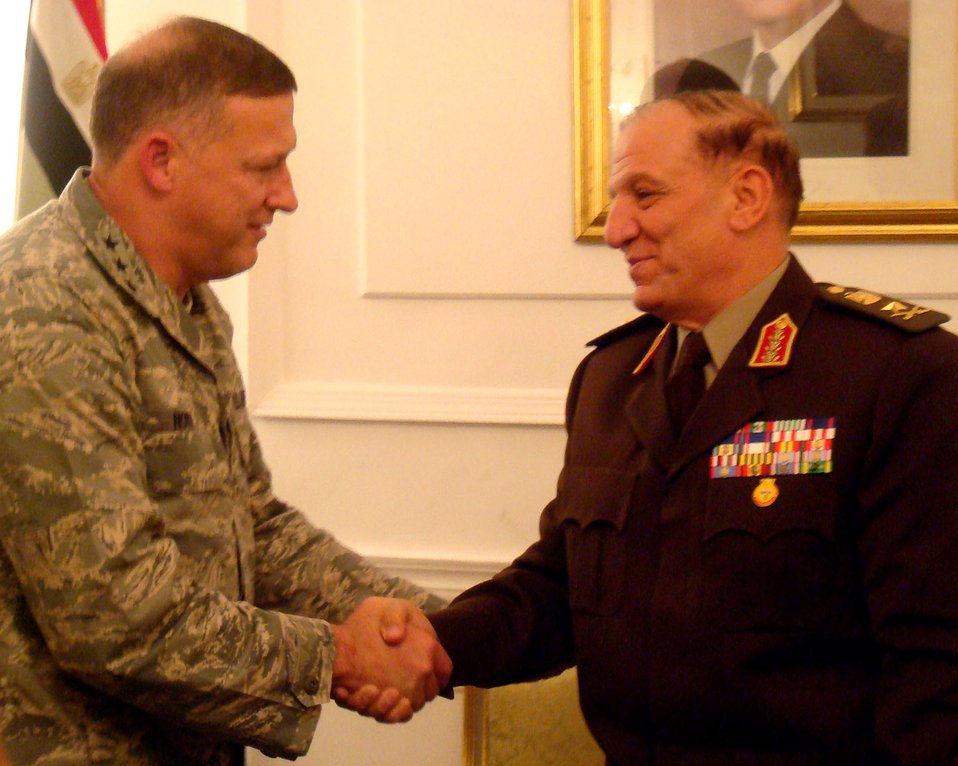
CENTAF commander meets with key officials in Egypt

Lt. Gen. Gary North, U.S. Central Command Air Forces commander, meets with Lt. Gen. Samy Enan, the Egyptian Armed Forces Chief of Staff, at the Ministry of Defense in Cairo Jan. 29.